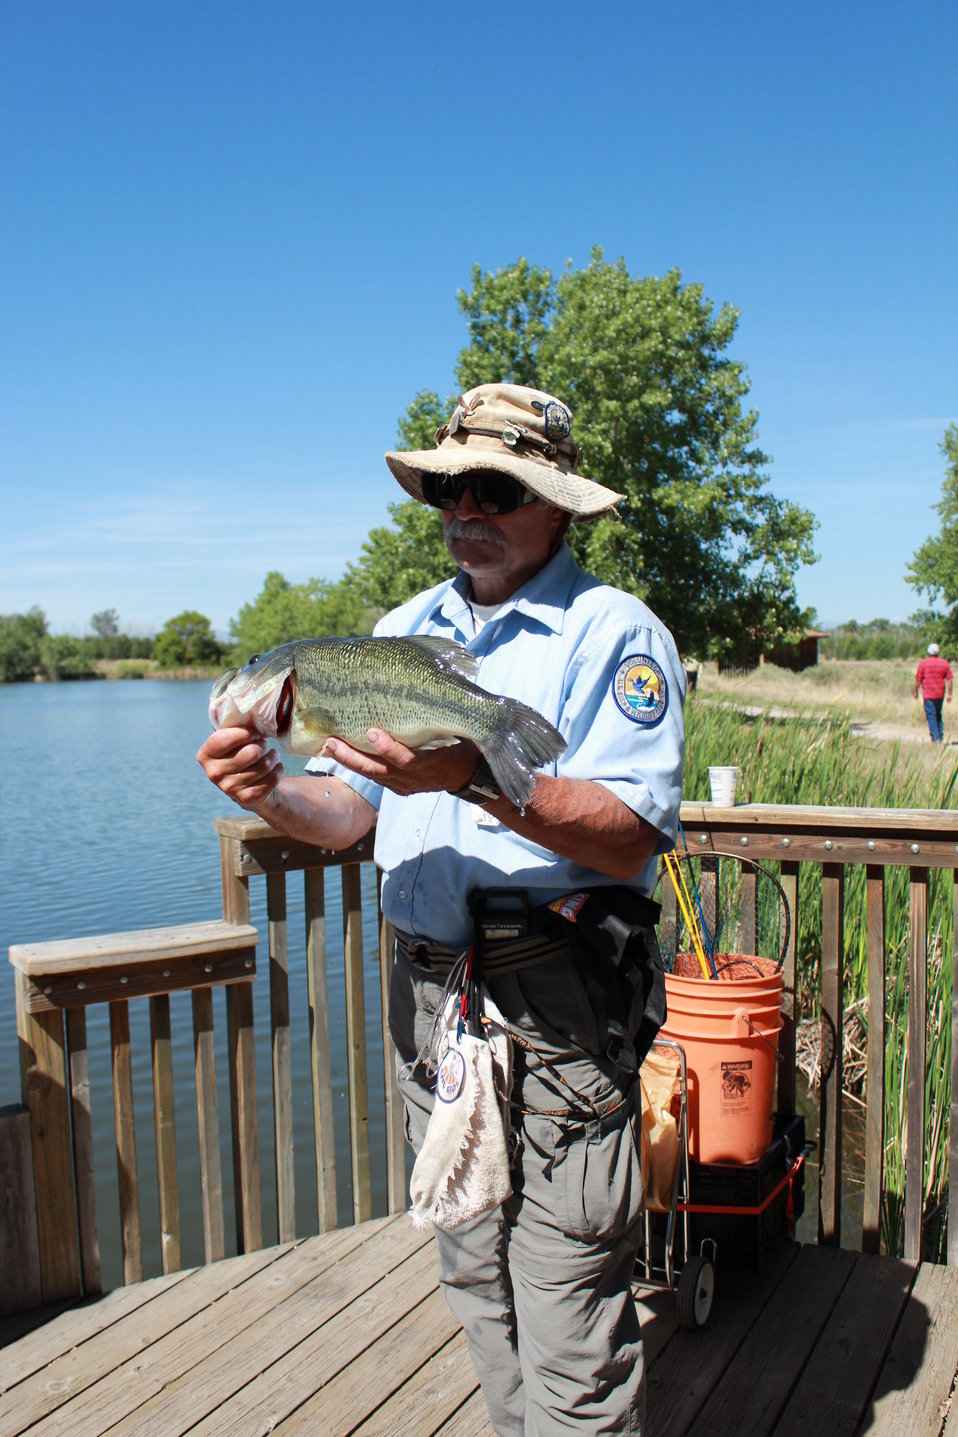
Catch of the Day

A Rocky Mountain Arsenal NWR volunteer holds up the catch of the day during the 2012 Fishing Frenzy.

Location: Lake Mary, Rocky Mountain Arsenal NWR

Credit: Jaclyn Kircher / USFWS

Photo Contest Entry #30